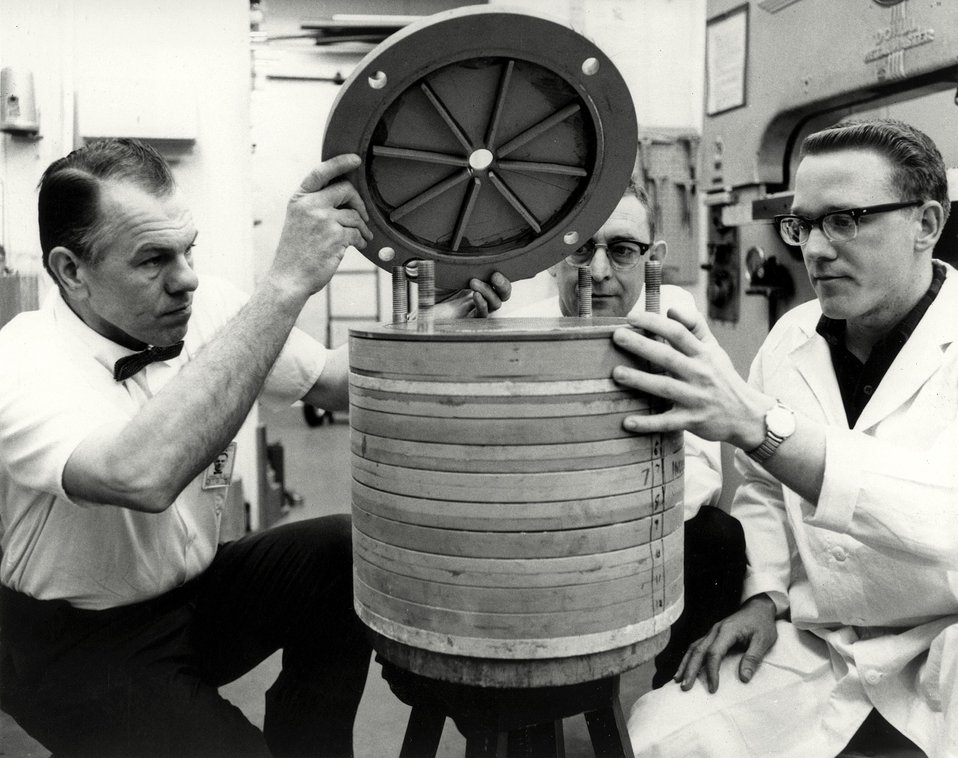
The development of high-volume filtration-resorption water sampling systems for the collection of radionuclides enables Pacific Northwest Laboratory scientists to measure concentrations of naturally occurring radionuclides, fission products, and stable elements in the air and sea. c. 1971